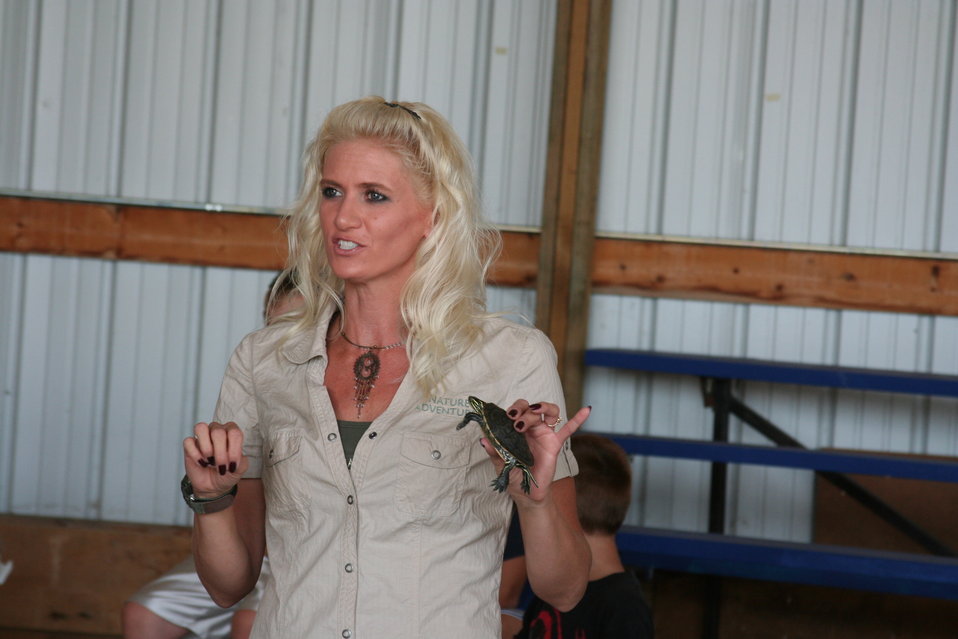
2011 Huron Prairie Fest